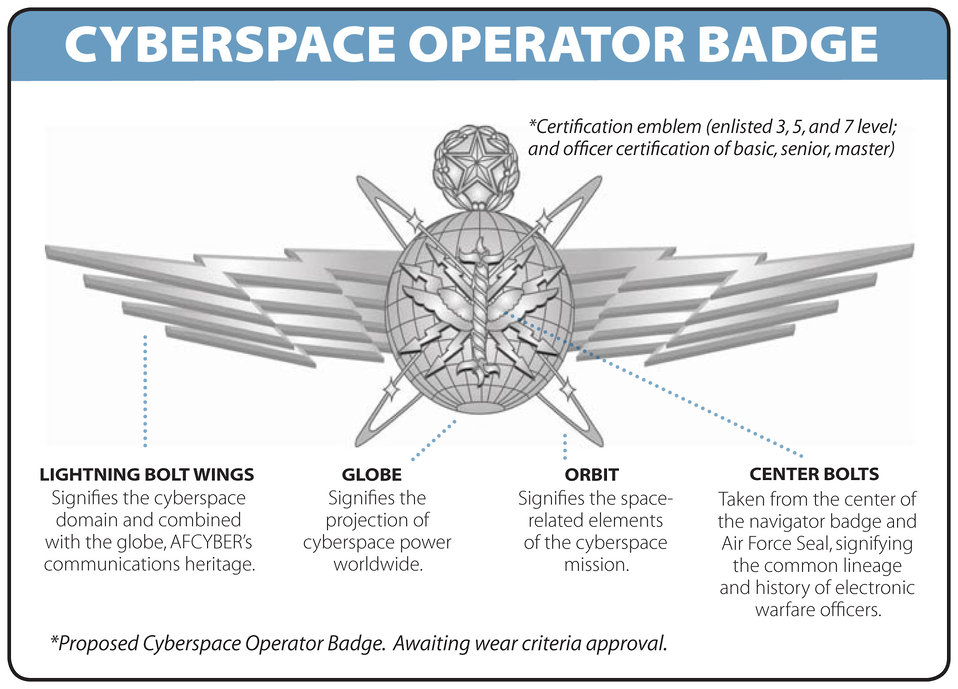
Cyberspace career fields, training paths, badge proposed

The proposed cyberspace operator badge. The wear criteria is still under review.